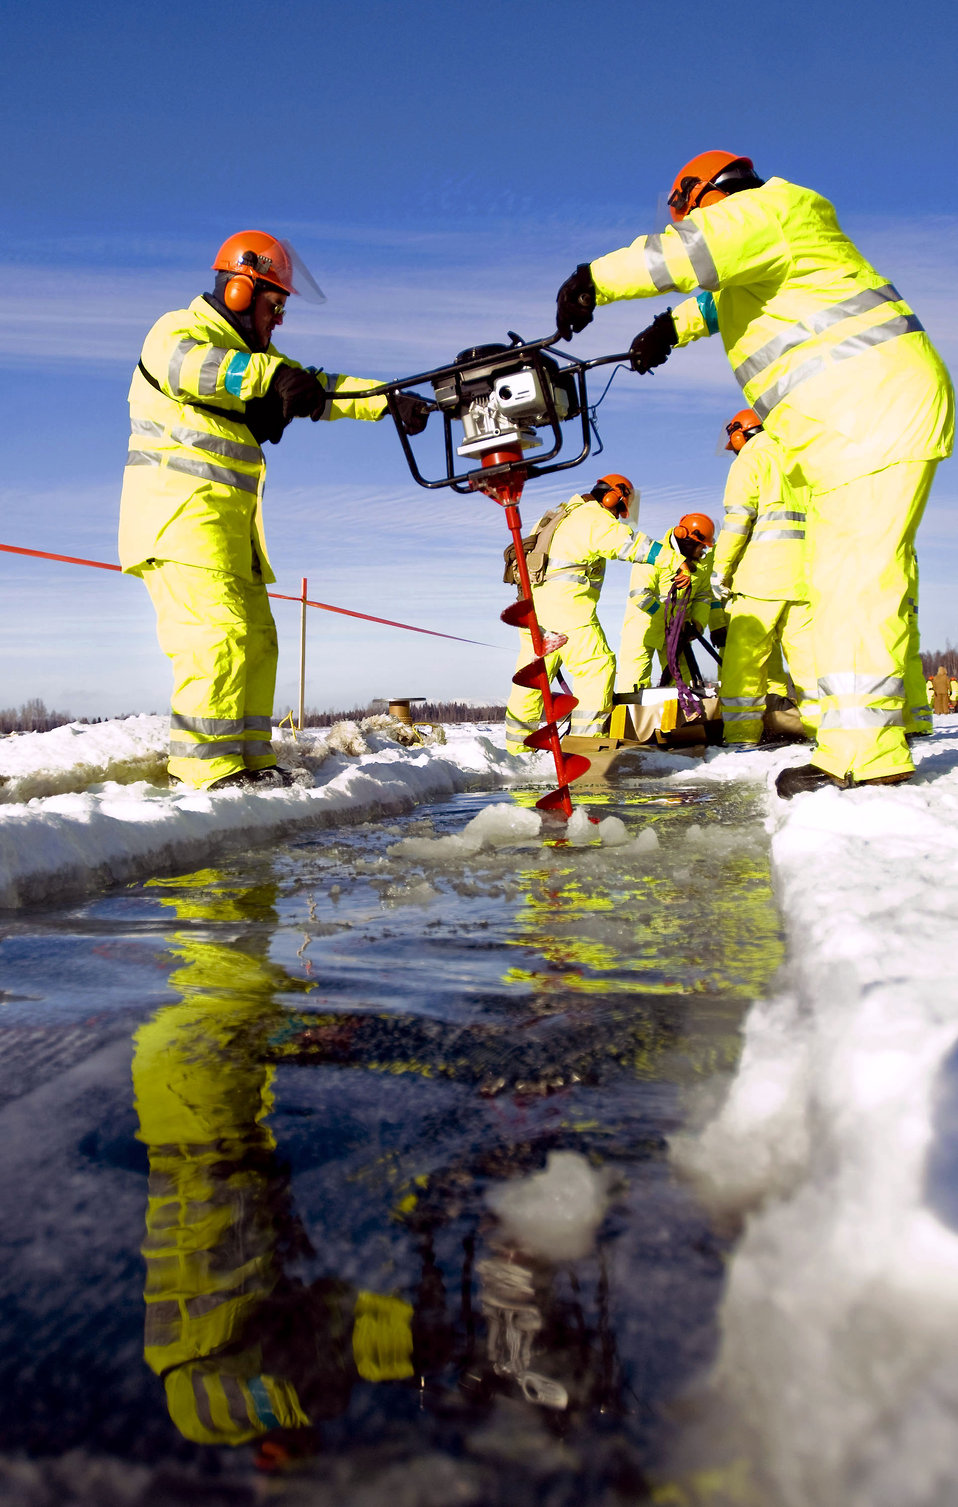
Ice Operation has slippery start

Master Sgt. James Fraser and Tech. Sgt. Eddie Campbell drill a hole in the ice using an auger Feb. 24. They were out on Six-mile Lake to practice oil spill recovery tactics on Elmendorf Air Force Base, Alaska. Sergeants Fraser and Campbell are with the 611th Civil Engineer Squadron.